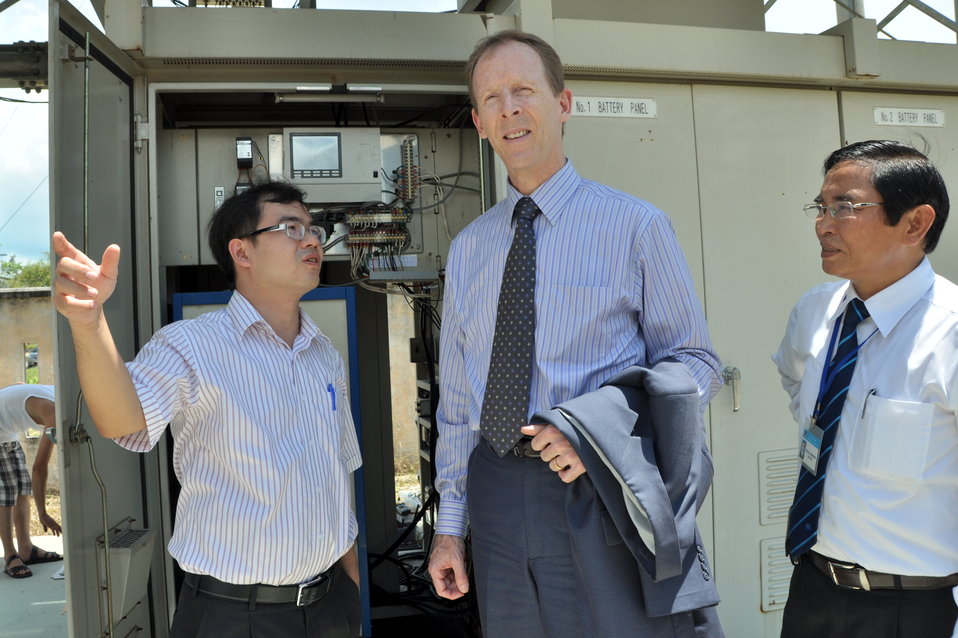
USAID Mission Director visits Danang University of Technology

Danang, July 17, 2013